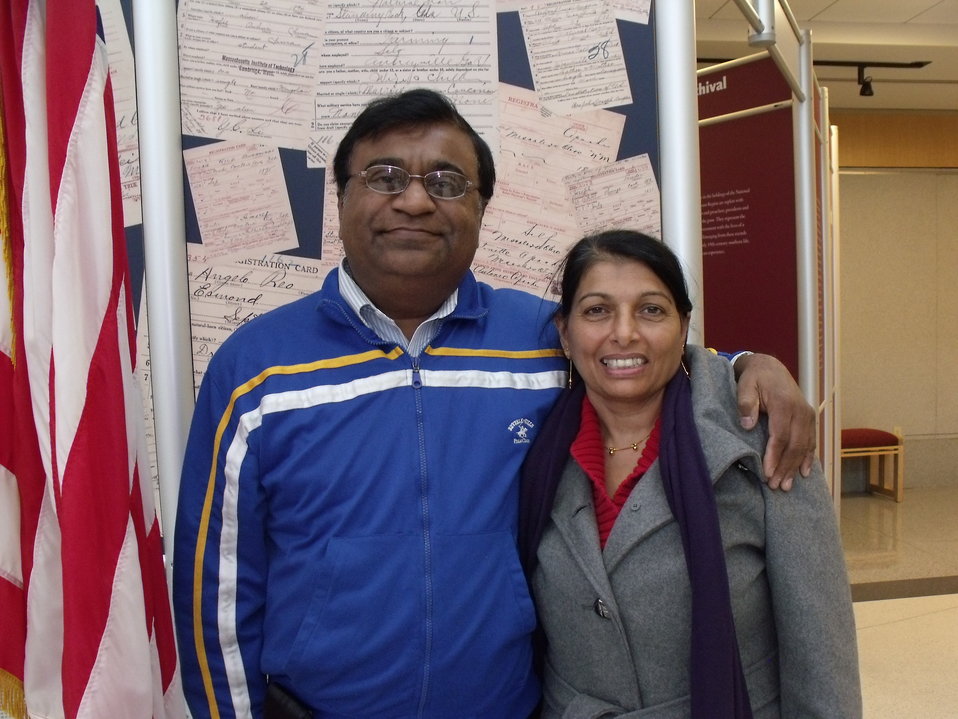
New Citizens